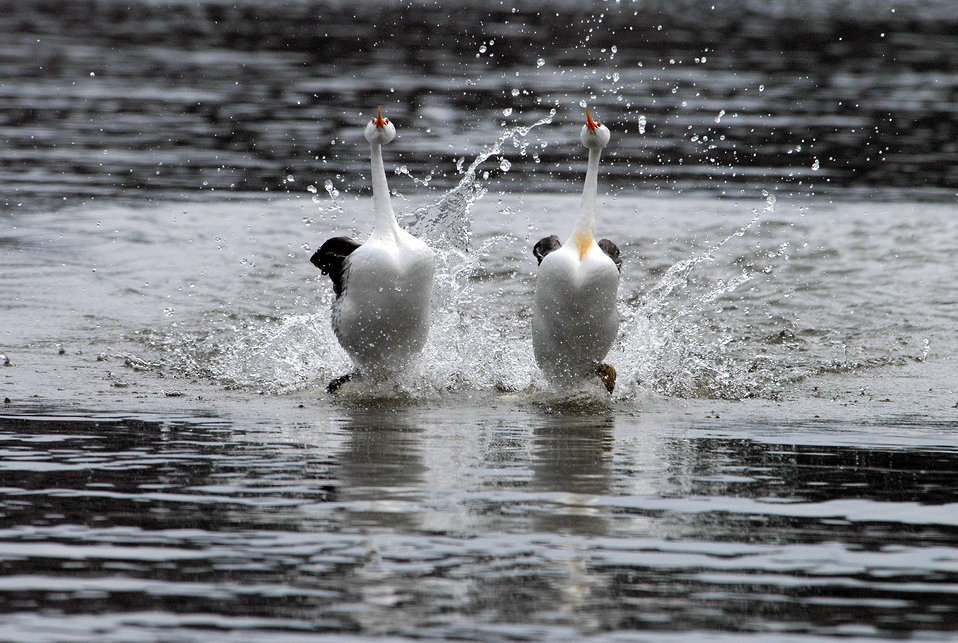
Clark's grebes rushing

Clark's grebes perform a splashy courtship dance called rushing.